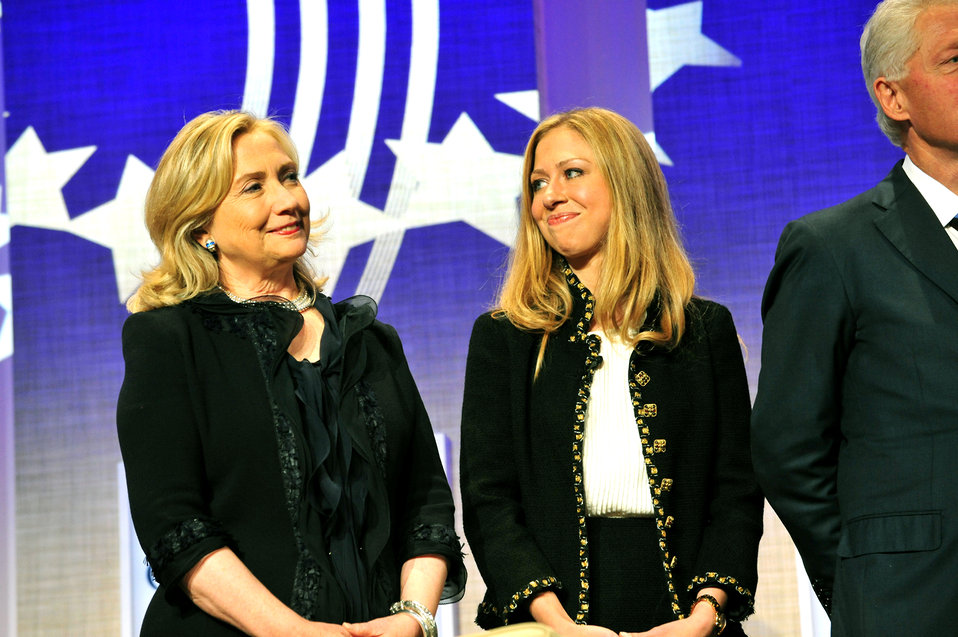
Secretary Clinton and Chelsea Clinton Participate in the Clinton Global Initiative Annual Meeting

U.S. Secretary of State Hillary Rodham Clinton and Chelsea Clinton participate in the Clinton Global Initiative Annual Meeting and hold a one-on-one “conversation” during the Closing Plenary, at the Sheraton Midtown Hotel in New York, New York, on September 22, 2011.